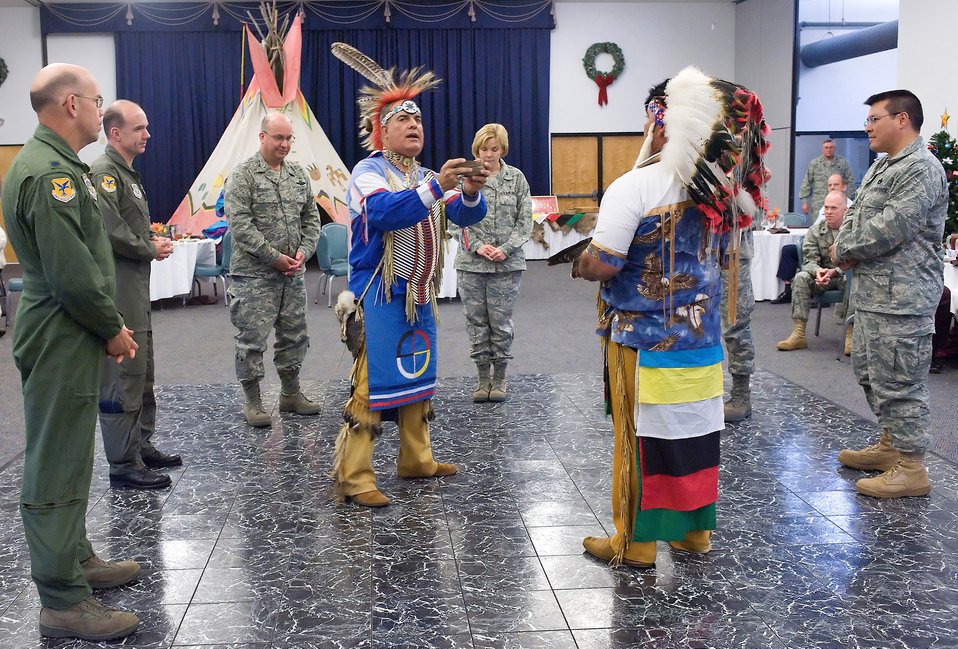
Giving thanks

Bruce